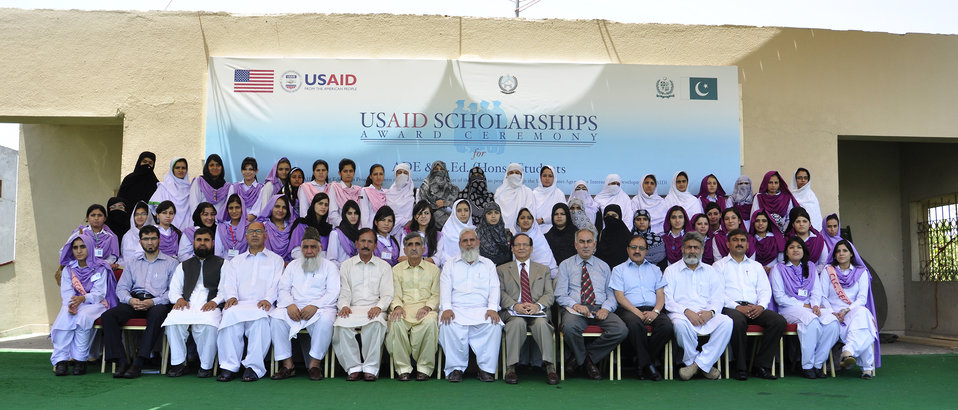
Group

The U.S. Agency for International Development (USAID) provided scholarship awards to 147 student-teachers from various KP universities and colleges. The picture shows the first batch of girl student-teachers with Mr. Faid Qureshi, Special Secretary, Elementary & Secondary Education, Khyber Pakhtunkhwa (KP) (middle front row) and other dignitaries from Government of KP, USAID and the USAID-supported Teacher Education Project.